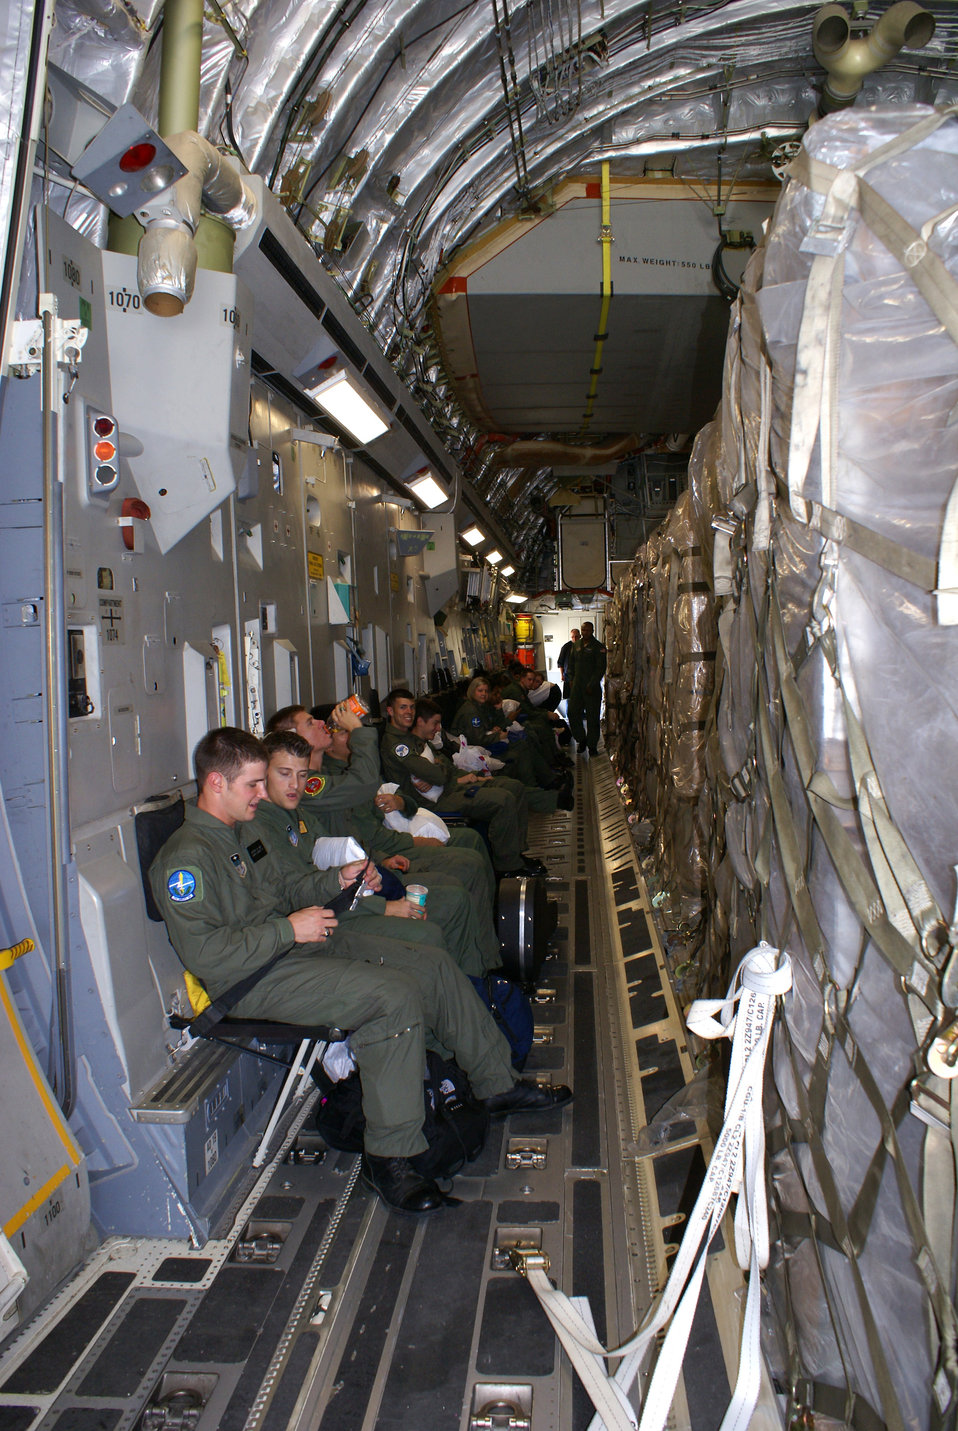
Cadets learn mission through Operation Air Force

U.S. Air Force Academy cadets fly on board a C-17 Globemaster III from Hickam Air Force Base, Hawaii, to McChord AFB, Wash. The cadets flew as part of Operation Air Force, a career-broadening program.